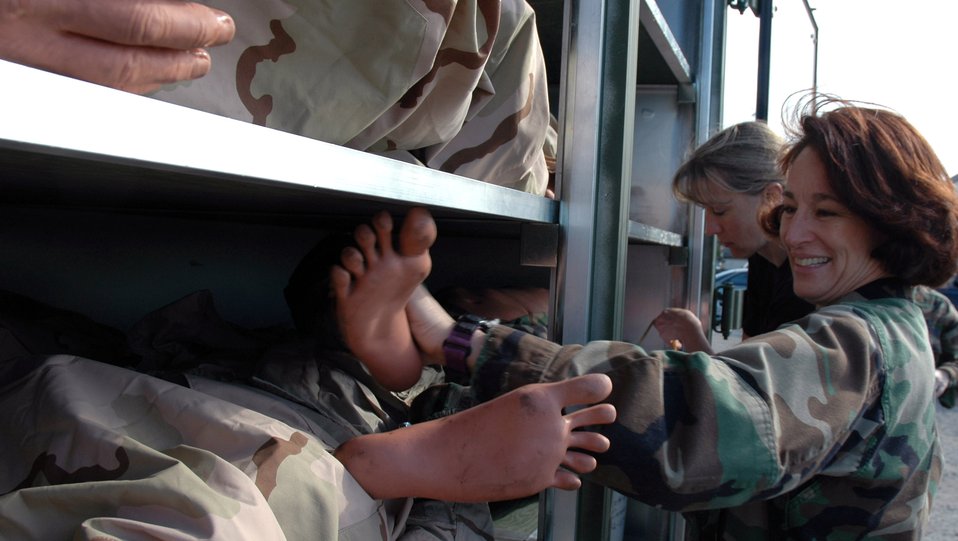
PIT crew brings realism to Pacific Lifeline exercise

Chief Master Sgt. Chandra Gamble and Lt. Col. Jennifer McCleve put a dummy back on the shelf after inspecting it Jan. 30 at McChord Air Force Base, Wash. The dummy will be used during the Pacific Lifeline exercise Jan. 26 to Feb. 9. More than 900 Department of Defense members are participating in the medical exercise. Chief Gamble is assigned to the 446th Aeromedical Staging Squadron, and Colonel McCleve is from the 446th Aerospace Medicine Squadron.